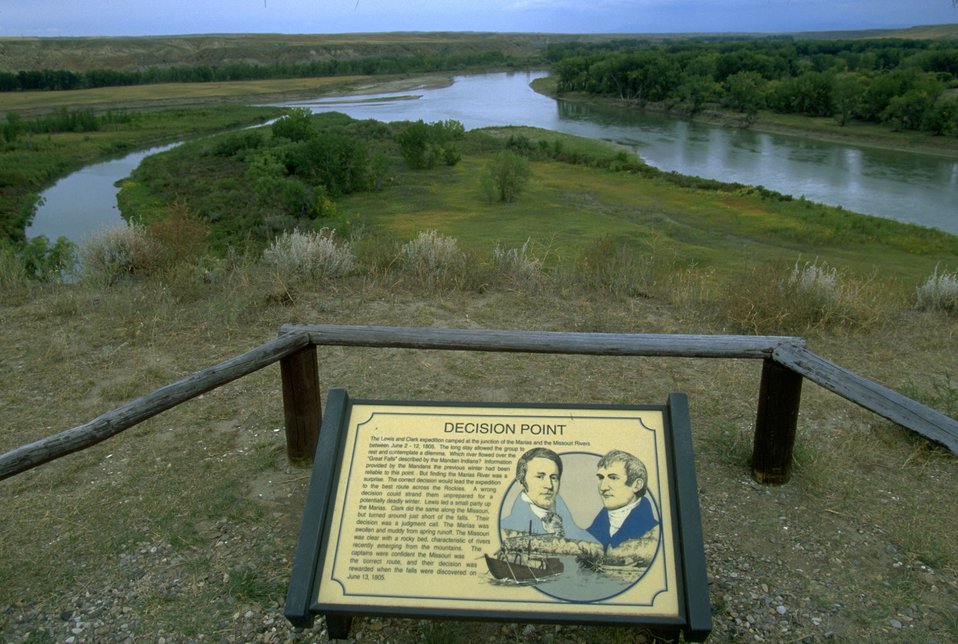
Interpretive signs at Decision Point, the confluence of the Marias and Missouri Rivers